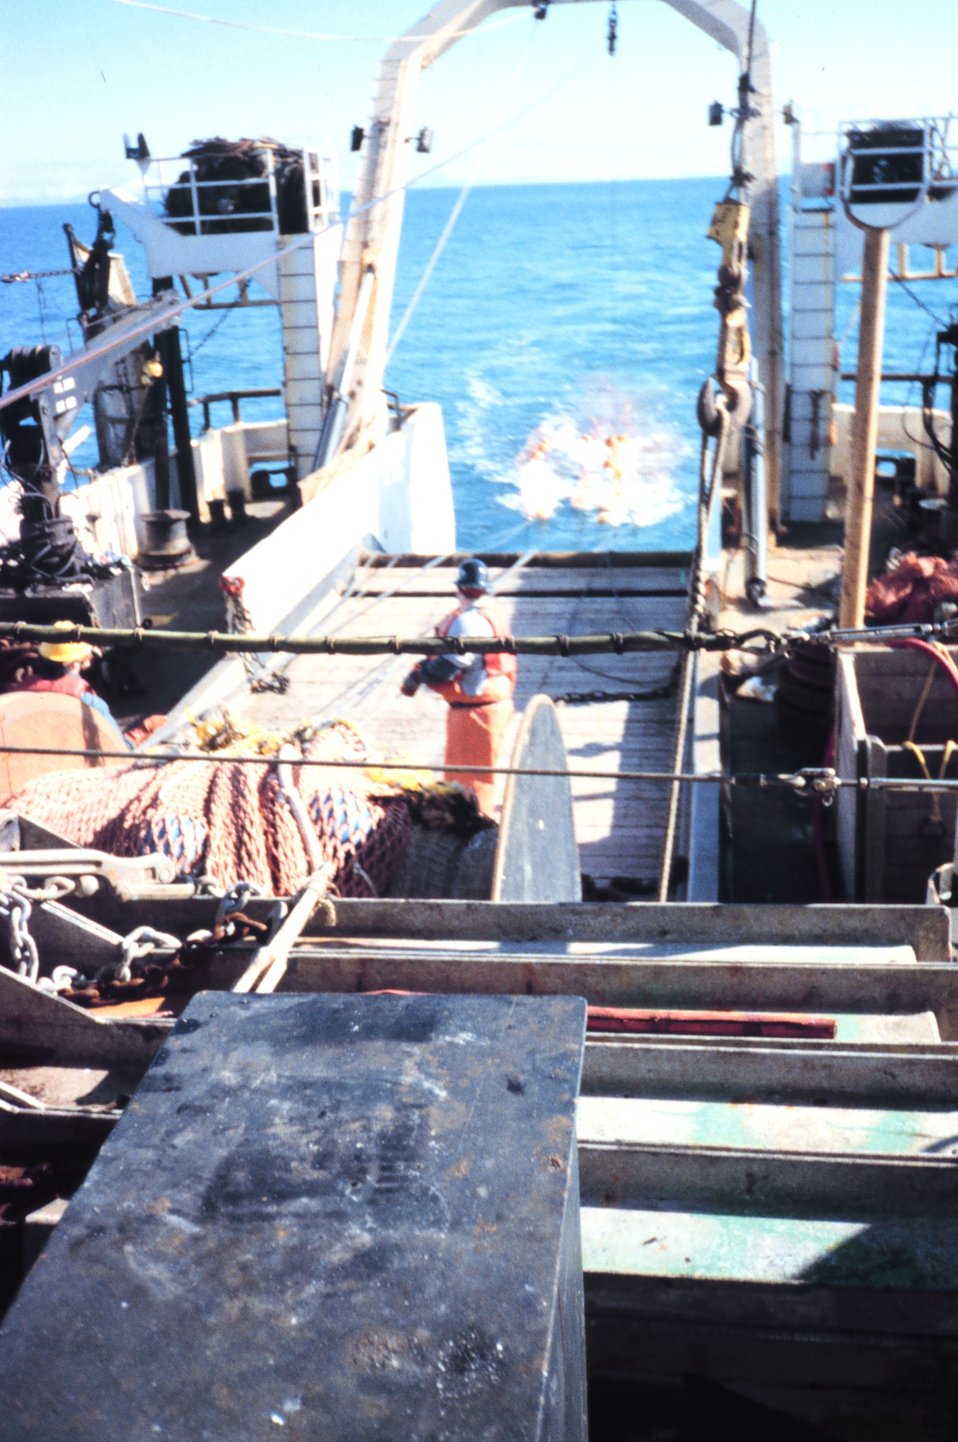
Photo # 3 - Streaming net during trawling operations. Yellow floats are pulled underwater but help keep the mouth of the net open while being towed.